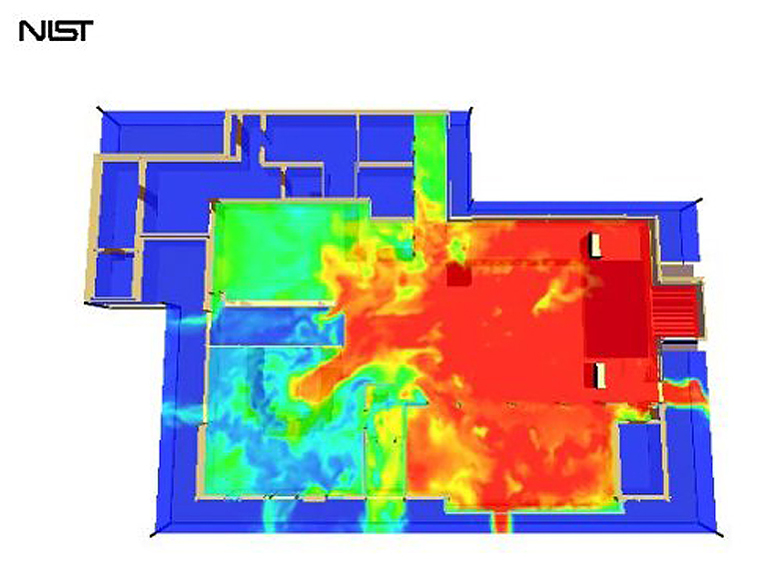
Fire Research; Simulations; Station Nightclub Investigation; Temperatures at 90 sec.

Computer model of fire at The Station nightclub showing the temperature variation after 90 seconds at 0.6 meter (2 feet) above the floor.